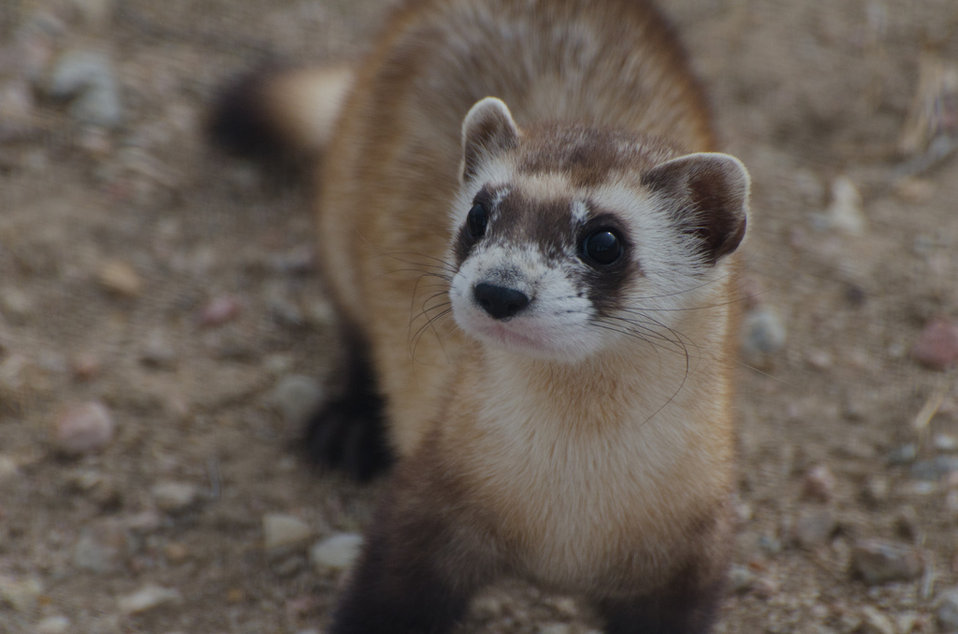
Black-footed Ferret